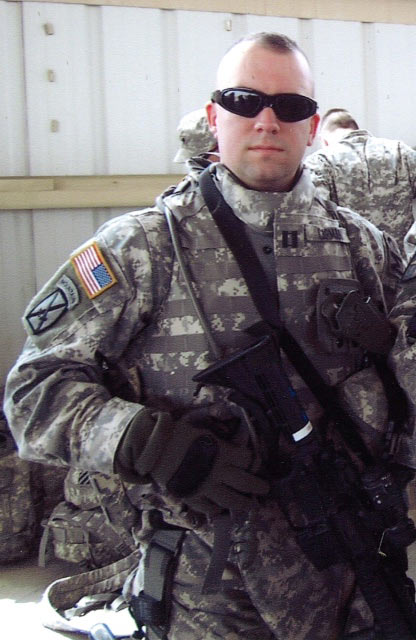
Matthew Carman-Mountain-Prairie Region

Matthew Carman, a Federal Wildlife Officer at the Devils Lake Wetland Management District in North Dakota, served in Iraq.